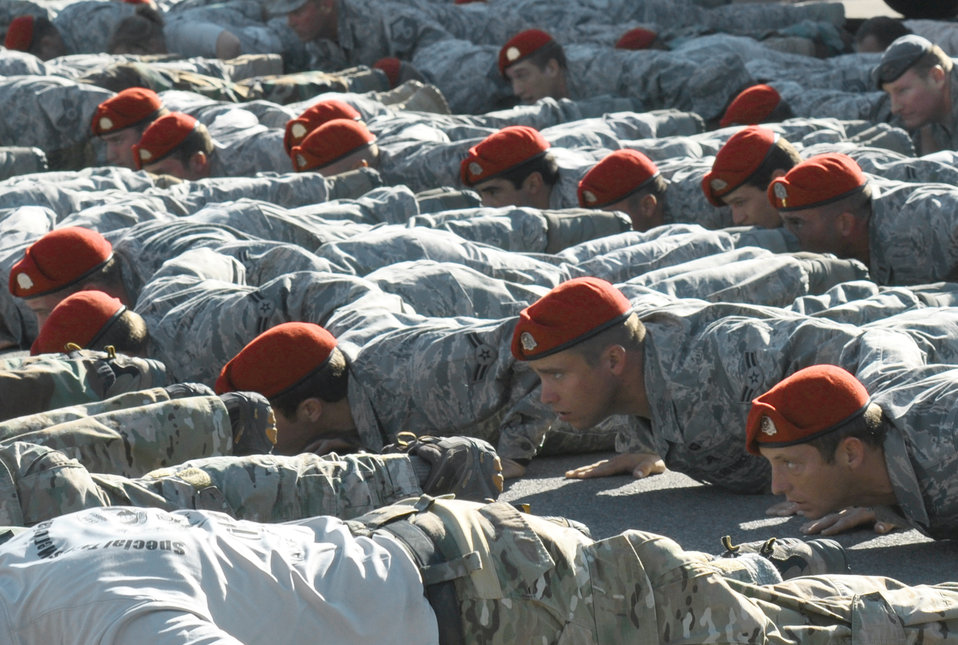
Special Tactics Memorial March

Special tactics Airmen conduct memorial pushups Oct. 21, 2010, at the completion of the Tim Davis Special Tactics Memorial March from Lackland Air Force Base, Texas, to Hurlburt Field, Fla. Fifteen special tactics Airmen completed the 860-mile trek to honor the memories of their fallen comrades.